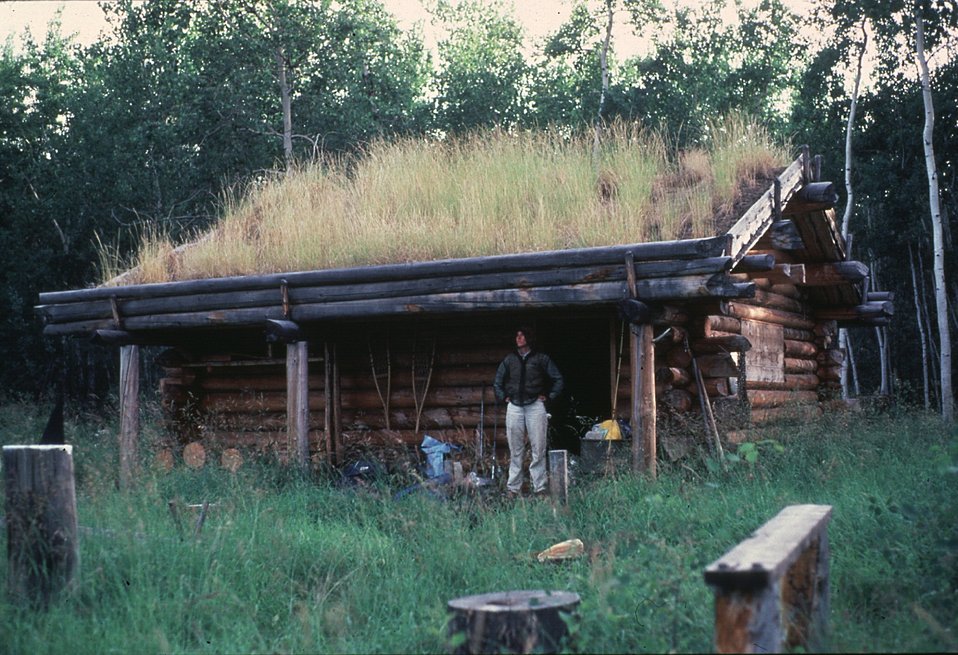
Cabin in Yukon Flats NWR